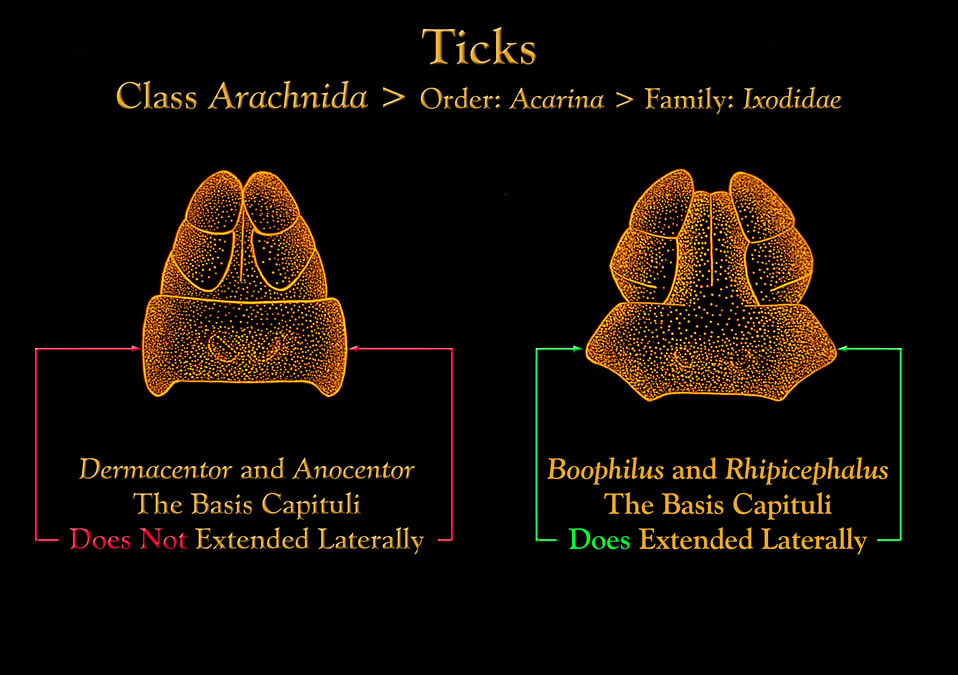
This drawing compares the absence or presence of a laterally extended basis capituli in four genera of Ixodidae ticks.